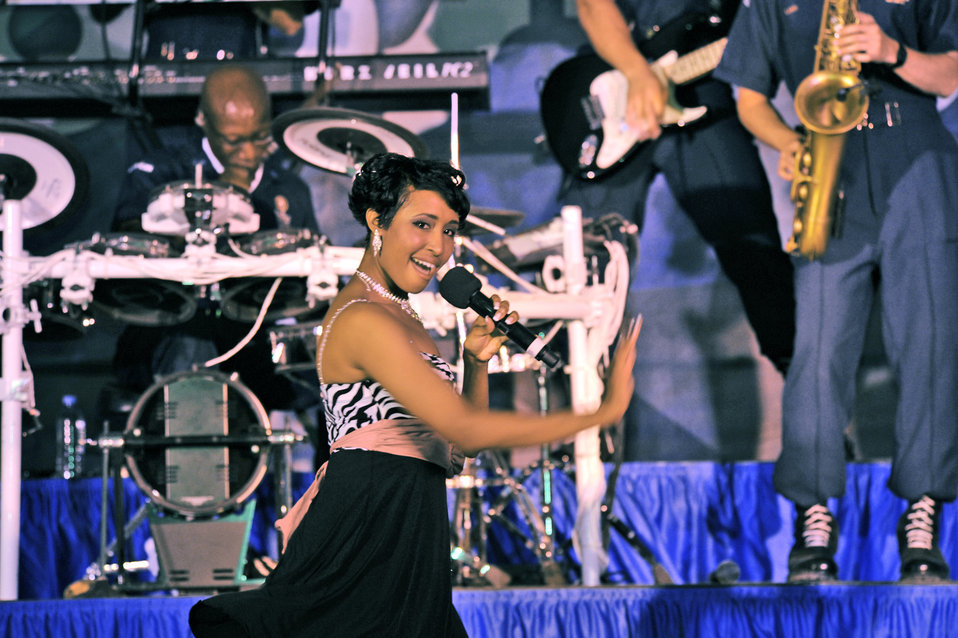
Blue Night

Staff Sgt. Aisha Smith performs for an audience of deployed U.S. and coalition forces July 14, 2009, in Southwest Asia. Tops In Blue officials are currently seeking new performers for the 2010 world tour. Sergeant Smith, a native of Richmond, Va., was a Tops In Blue vocalist for the 2009 tour. She is a public health craftsman with the 6th Aerospace Medicine Squadron at MacDill AFB, Fla.